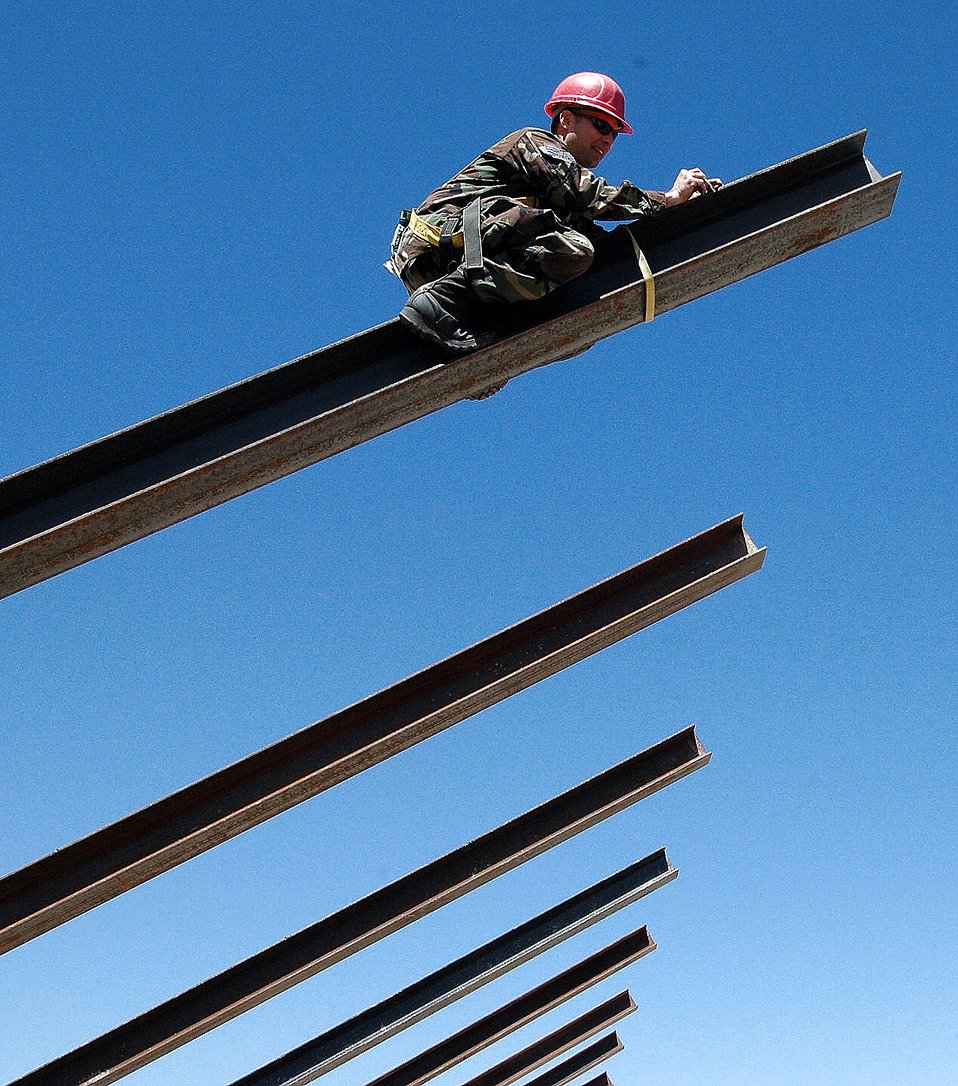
RED HORSE members make difference on the border

Staff Sgt. George Thompson marks a steel beam with chalk so it can be cut to its proper length May 1 near Campo, Calif. The beams will be used to finish off an